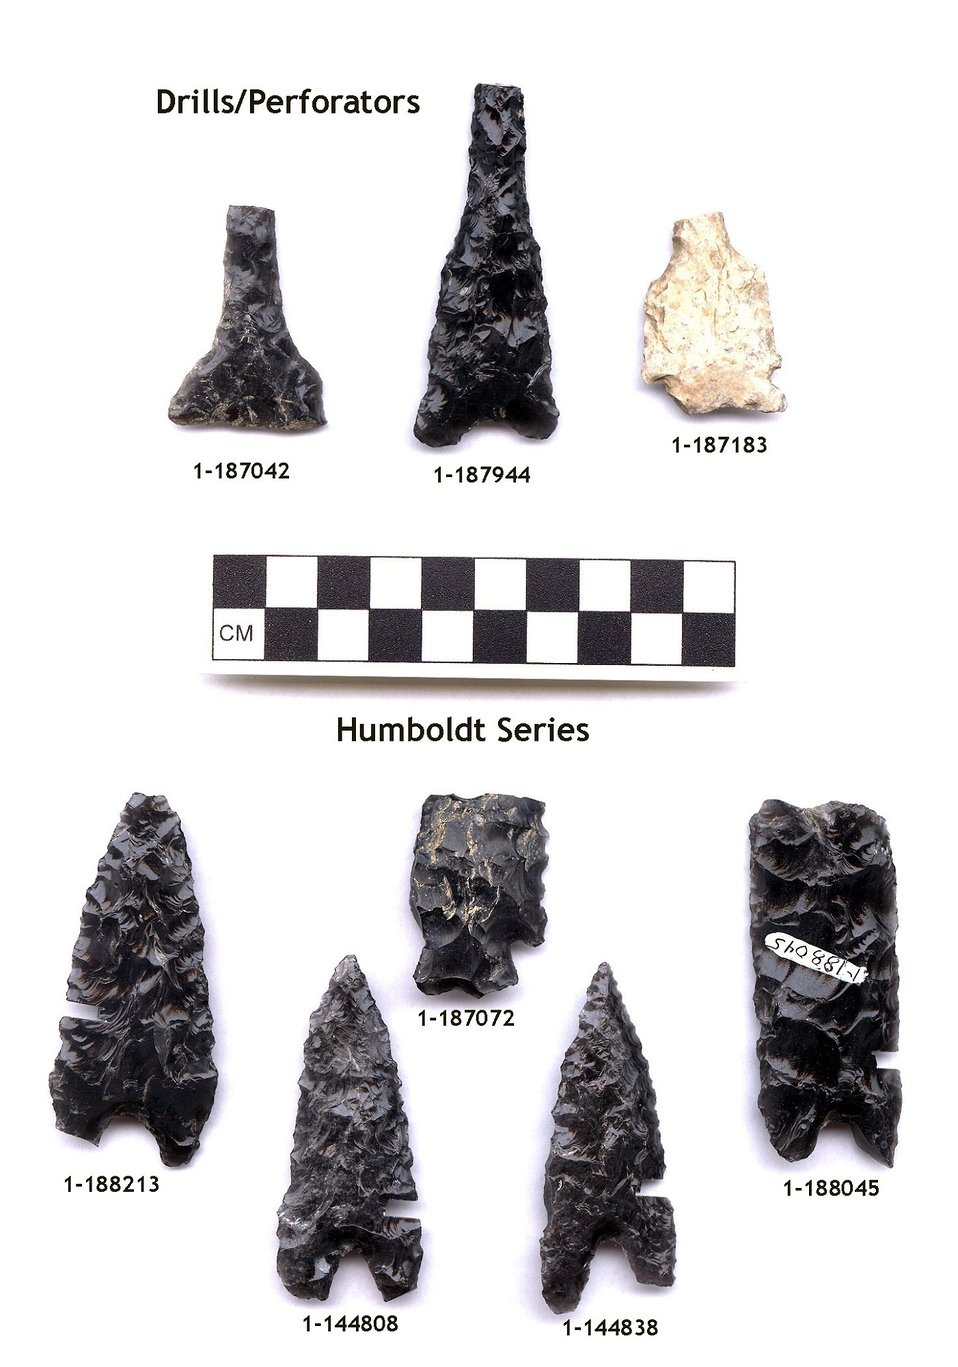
Arrowheads and dart points